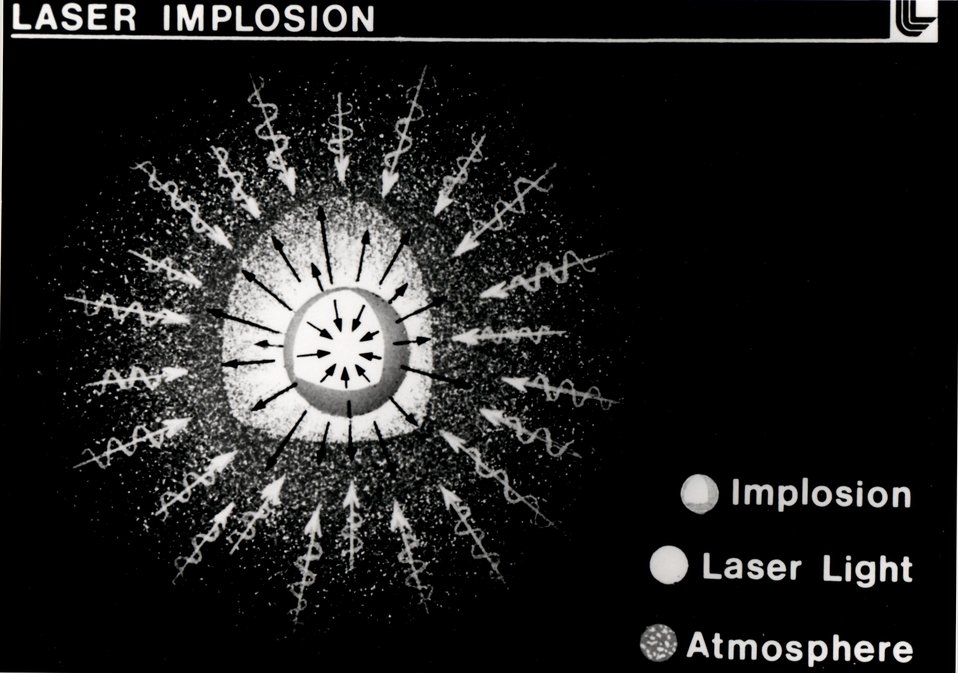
Artist's concept of the process involved with a laser-fusion pellet compression. Laser-fusion concepts being investigated by ERDA and private laboratories rely upon the inertia of material which is caused to implode toward the center of a spherical geometry, resulting in compression of the hydrogen fuel pellets. c. 1975